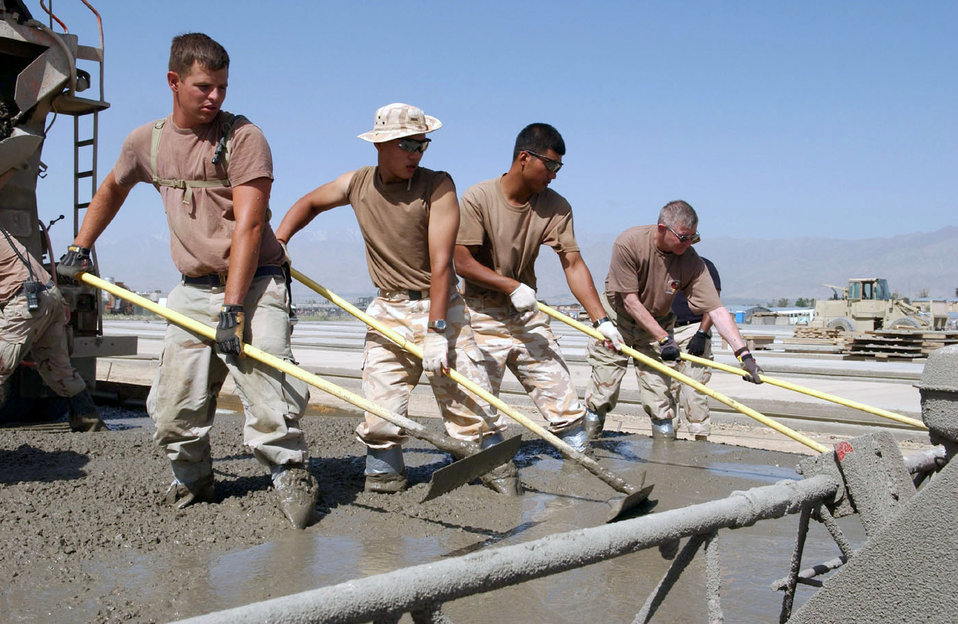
'Cementing' friendships

BAGRAM AIR BASE, Afghanistan -- (Left to right) Staff Sgt. Gregory Lund, South Korean army Pfcs. Yi Dong Gon and Jung Yong Hoon, and Col. Gary Woltering work side-by-side